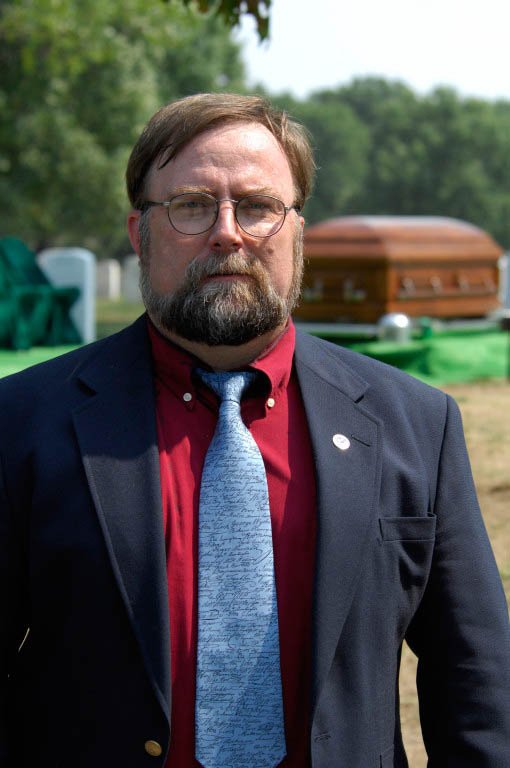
Pilot's survivors thankful for determined historian

Douglas Beckstead poses in front of the casket of 2nd Lt. Harold Elton Hoskin during a burial ceremony Sept. 7 at Arlington National Cemetery. Mr. Beckstead, historian for the 3rd Wing at Elmendorf Air Force Base, Alaska, was instrumental in the recovery of Lieutenant Hoskin's remains from the crash site of a B-24 Liberator in the Alaskan wilderness. The aircraft crashed while on a test flight out of Ladd Field in Fairbanks, Alaska, Dec. 21, 1943. Lieutenant Hoskin's remains were discovered in August 2006 and identified in April 2007.